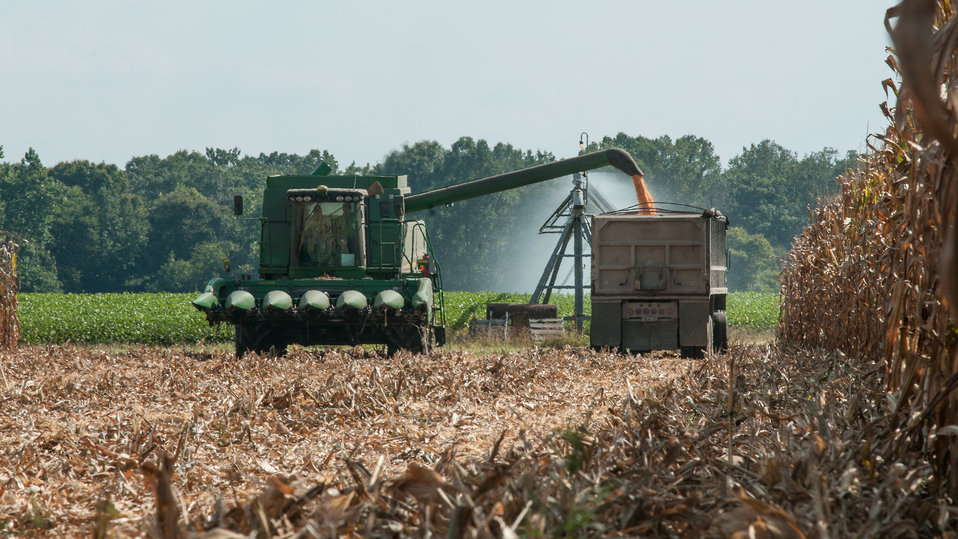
John N. Mills, Jr. operates his six-row corn harvester during the feed corn harvest at the John N. Mills & Sons farm; a family owned business located in the Hanover and King William Counties of Virginia, on Friday, Sept. 20, 2013. Pleasant Level Farm was the original farm from a Land Grant from King George III of England to Nicholas Mills in 1725. The original acreage has never left the Mills family name and continues to be farmed by the family.
Now the farm covers 5,744 acres that produce corn, wheat, soybeans, barley, hay, timber, and pastures a large herd of beef cattle. They have been using conservation and stewardship practices since the 1960s. Some of the efficient practices include no-till planting and cover crops to reduce soil erosion and prevent the leaching of nutrients into ground water, as well as livestock stream exclusion. The farm has several conservation easements that aids in the preservation and restoration of wetlands and waterways. For information about the U.S. Department of Agriculture (USDA), please go to www.usda.gov.